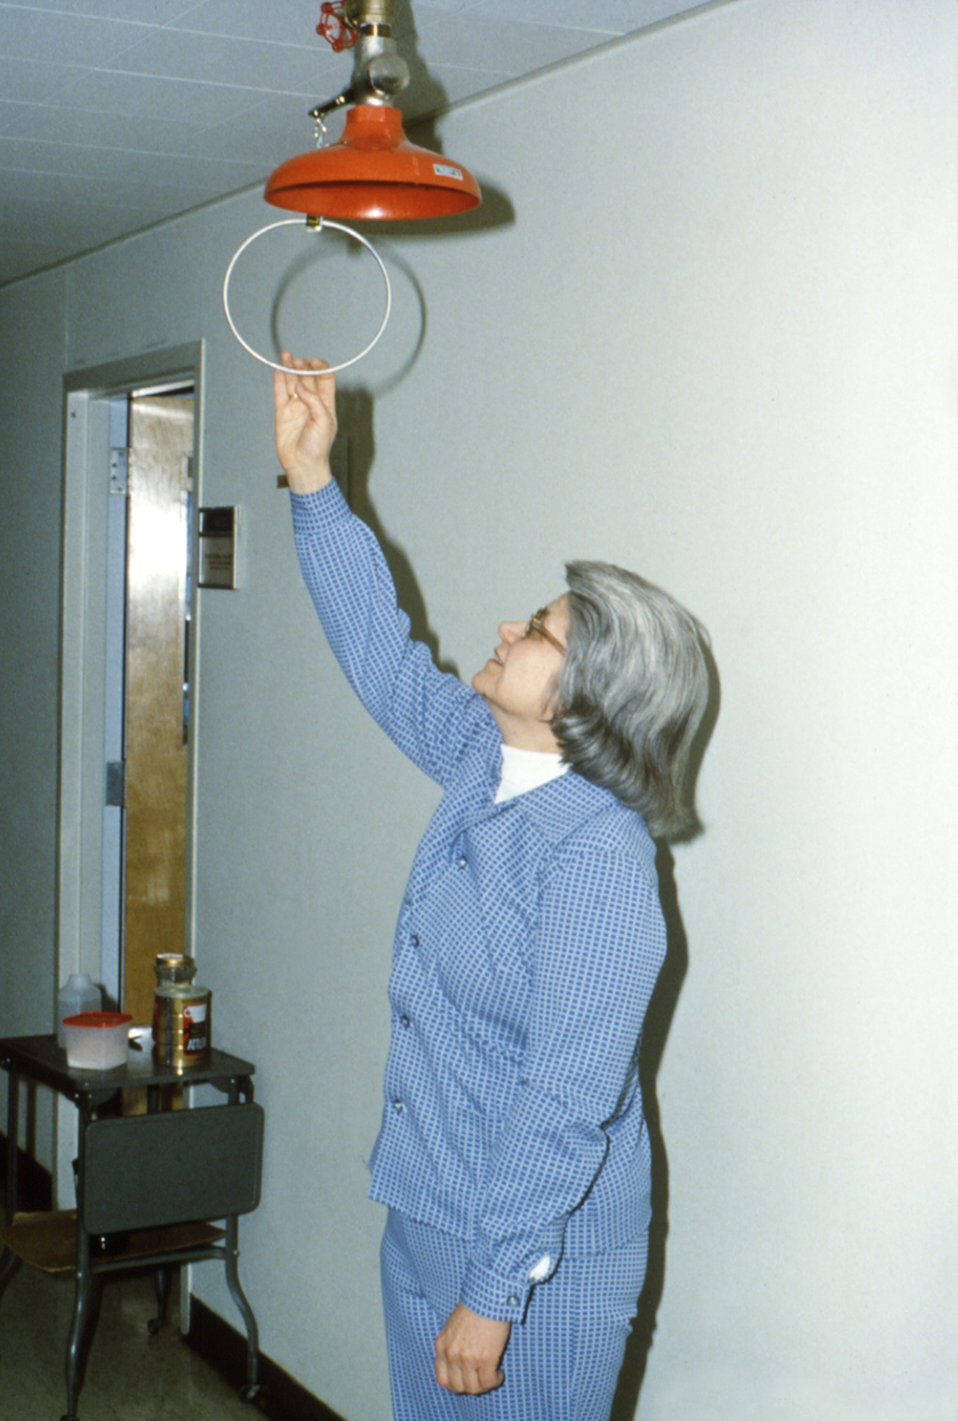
This photograph, taken during a lab safety study, shows a safety shower outside a CDC laboratory.